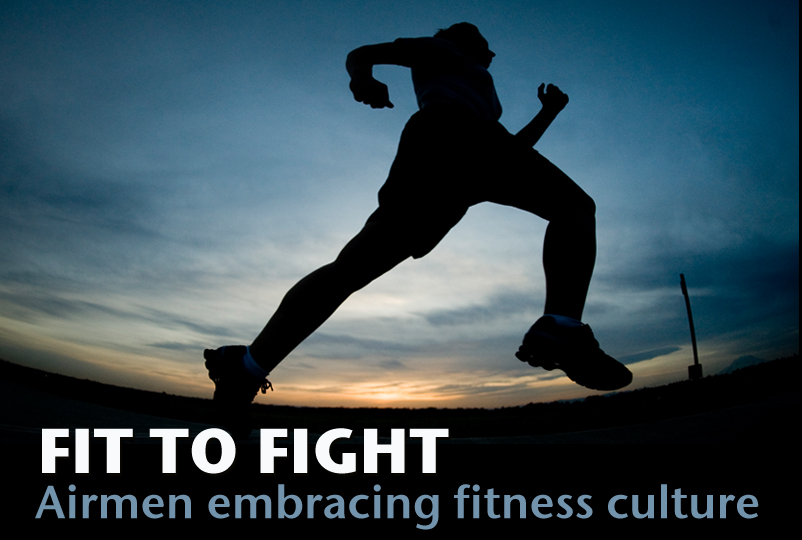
Airmen embracing fitness culture